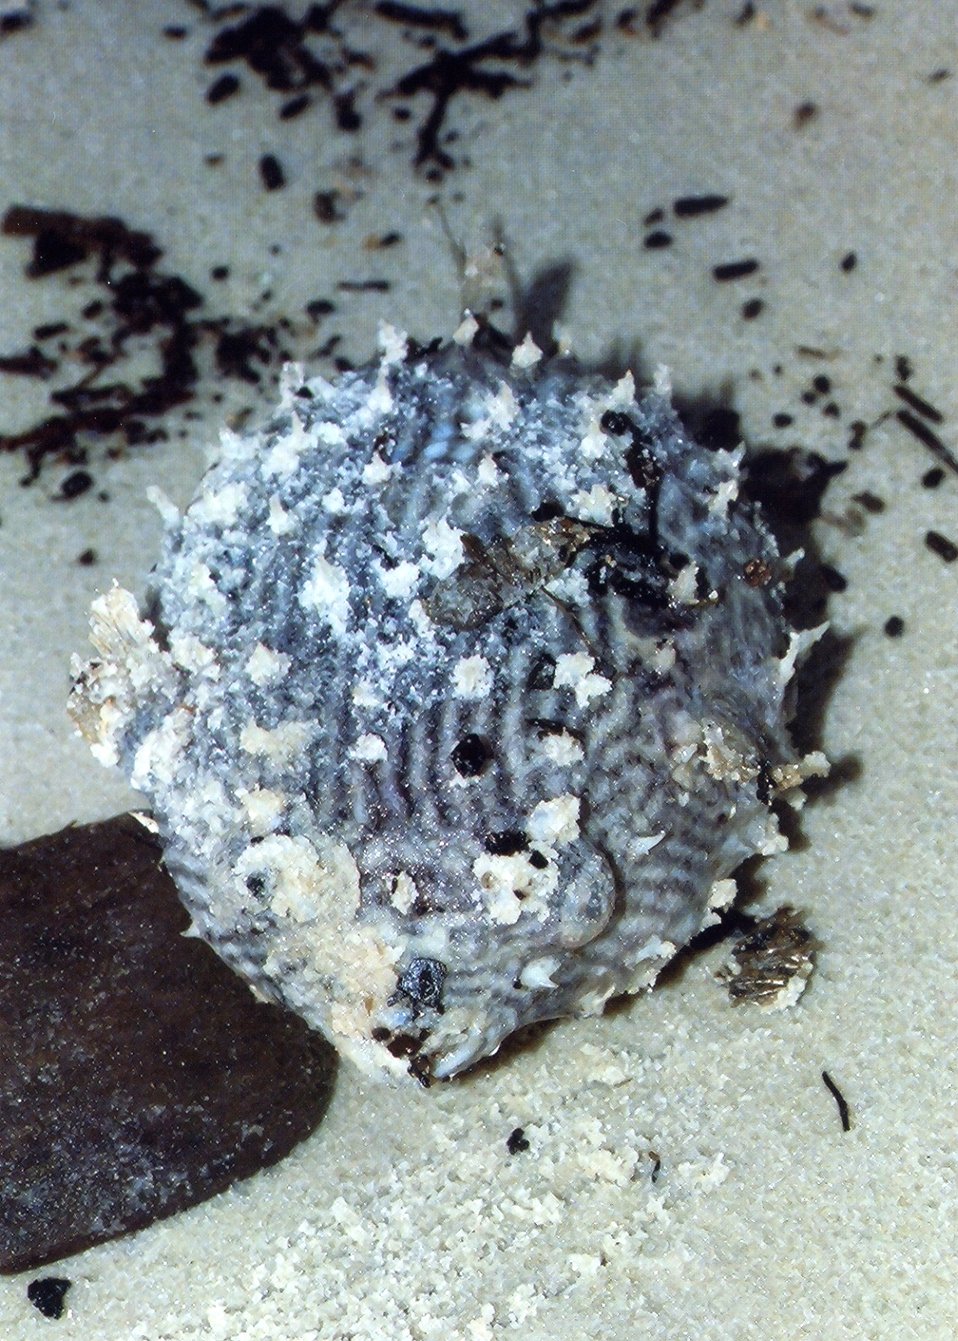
A little pufferfish washed up on the beach.